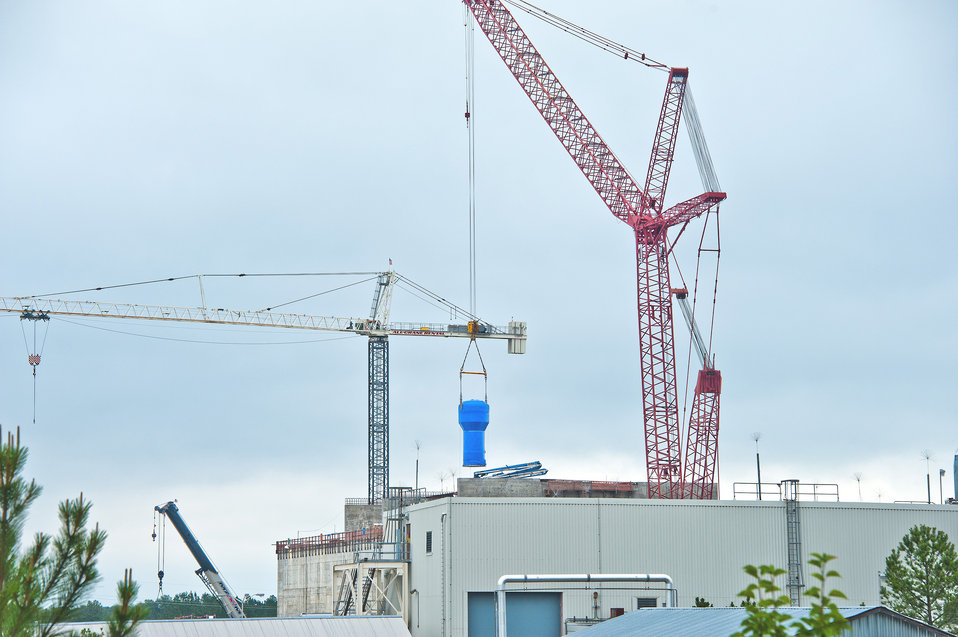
SRS Processing Tanks

A major construction milestone is met with the successful installation of six of 10 planned large processing tanks at the Savannah River Site’s (SRS) Salt Waste Processing Facility (SWPF). Installation of these critical facility components advances SWPF construction, allowing for piping and facility floors to be completed and the facility roof put into place. Slated for operation in late 2015, SWPF is designed to treat 33 million gallons of salt waste currently stored in underground tanks at SRS.